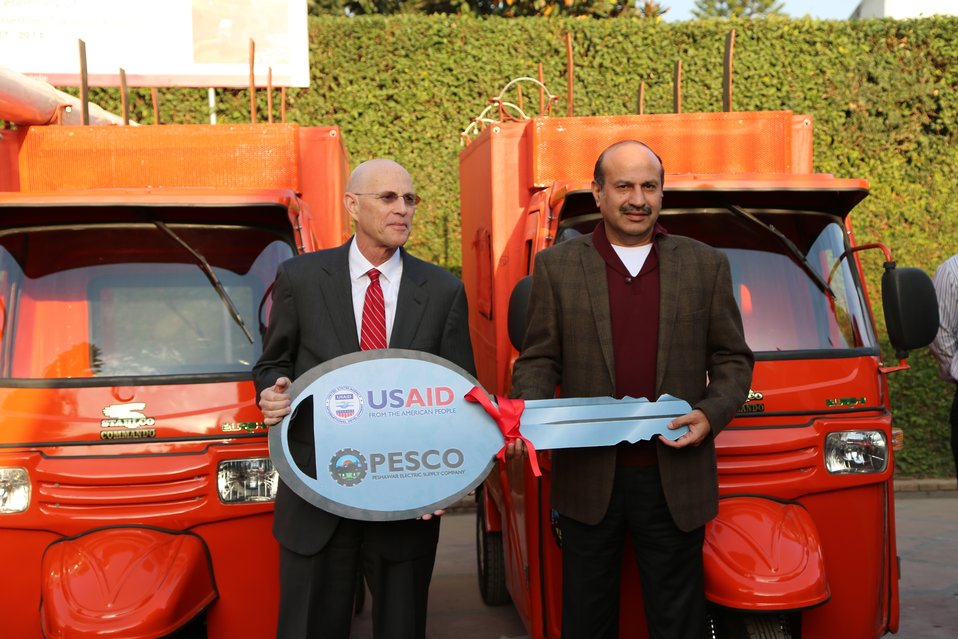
Key Handing Over (3)